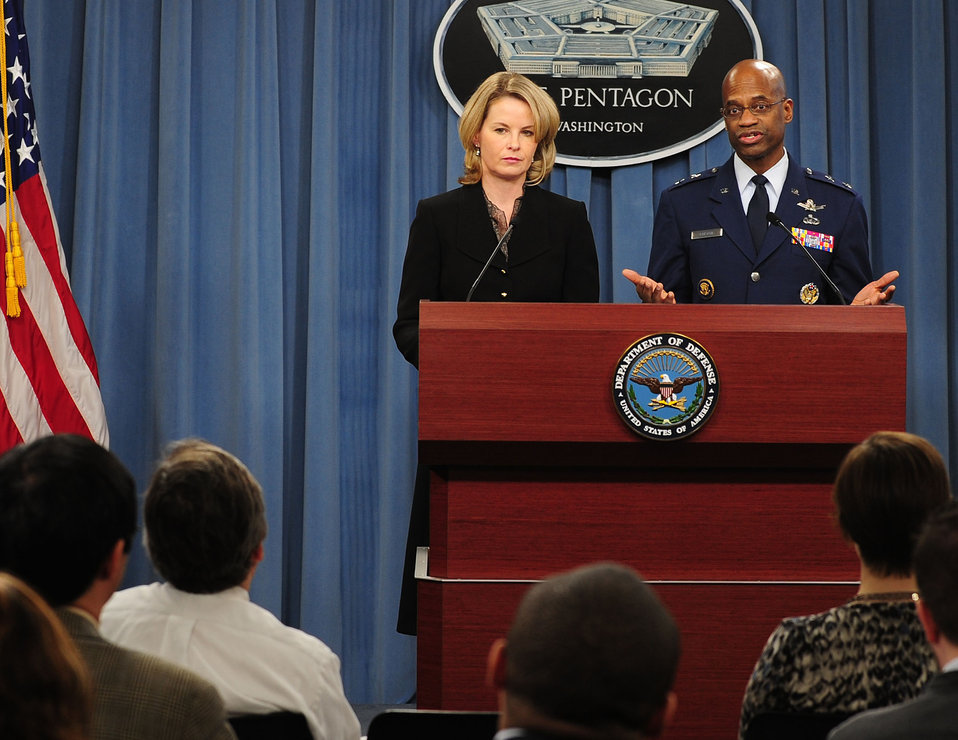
Maj. Gen. Edward L. Bolton Jr. the deputy assistant secretary for budget,
Office of the Assistant Secretary of the Air Force for Financial Management
and Comptroller and Marilyn Thomas, the deputy for budget, Office of the
Assistant Secretary of the Air Force for Financial Management and Comptroller,
Answer questions about the Air Force's fiscal year 2013 budget at a Pentagon
Press Briefing Feb. 13.